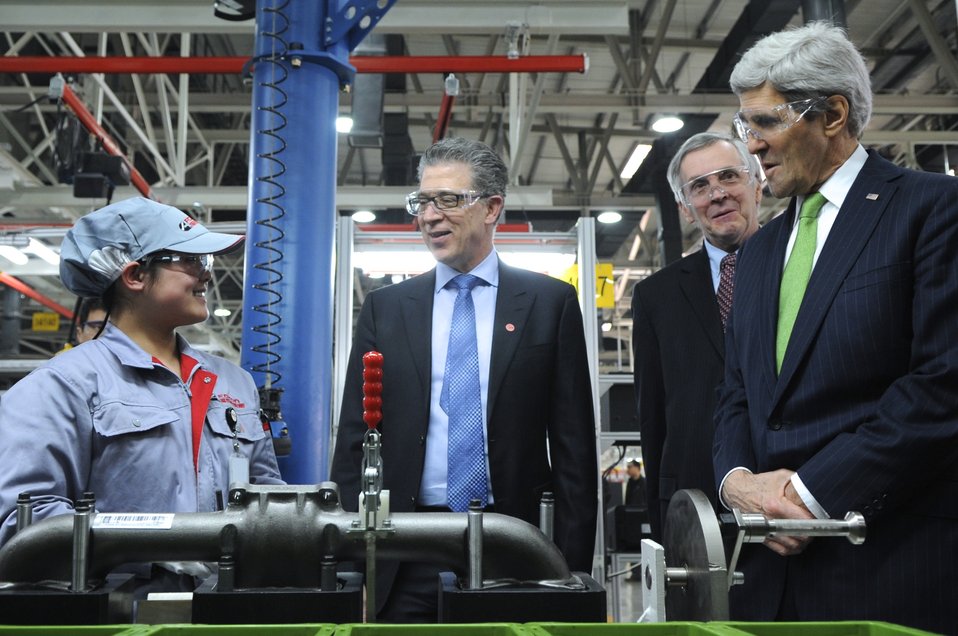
Secretary Kerry Chats With Worker on Engine Assembly Line

U.S. Secretary of State John Kerry chats with a worker who helps make clean-diesel engines while touring the Cummins-Foton Joint Venture Plant in Beijing, China on February 15, 2014.